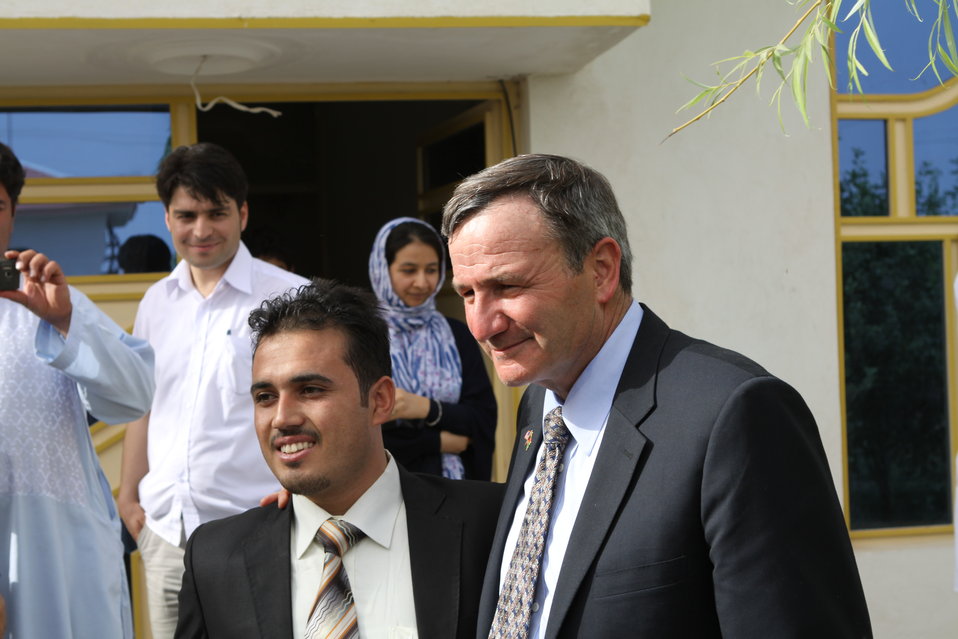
100525 Hirat Marble Conference 877